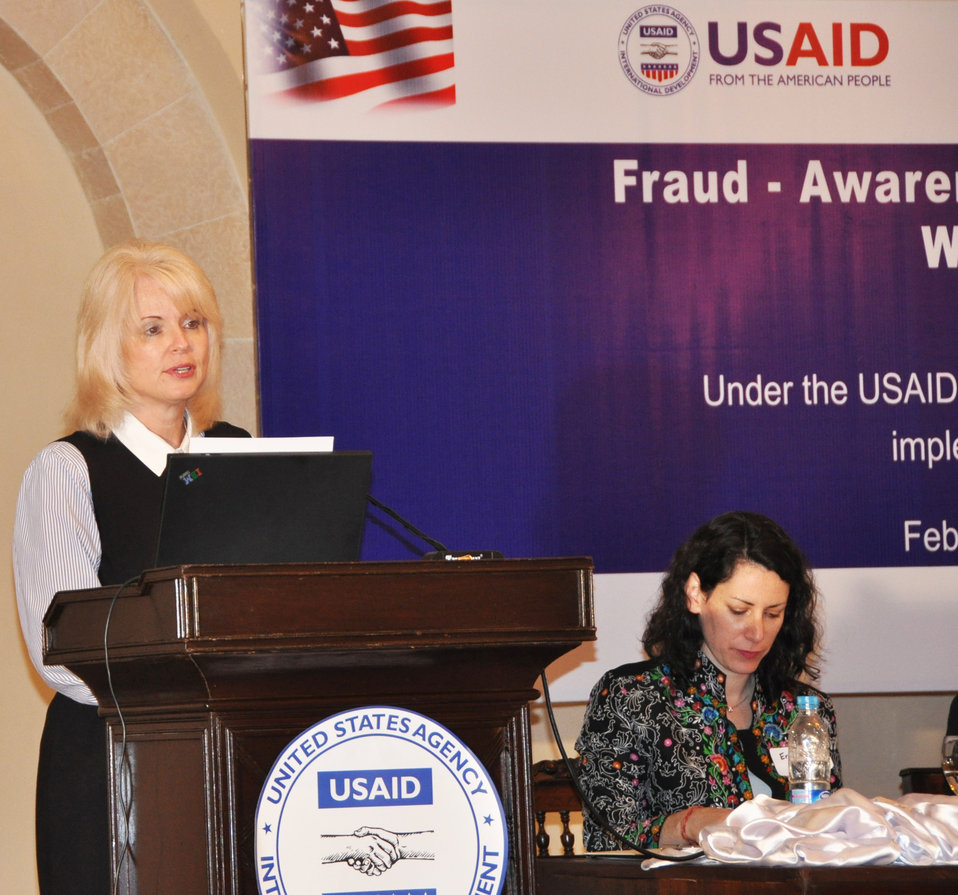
USAID Pakistan–sponsored Fraud Awareness Workshop

Islamabad, February 21, 2011 - Senior Deputy Mission Director Denise Herbol provides welcoming remarks at a USAID/Pakistan–sponsored Fraud Awareness Workshop, which brought together more than 100 implementing partners to help ensure transparency and accountability in the delivery of US assistance to Pakistan.